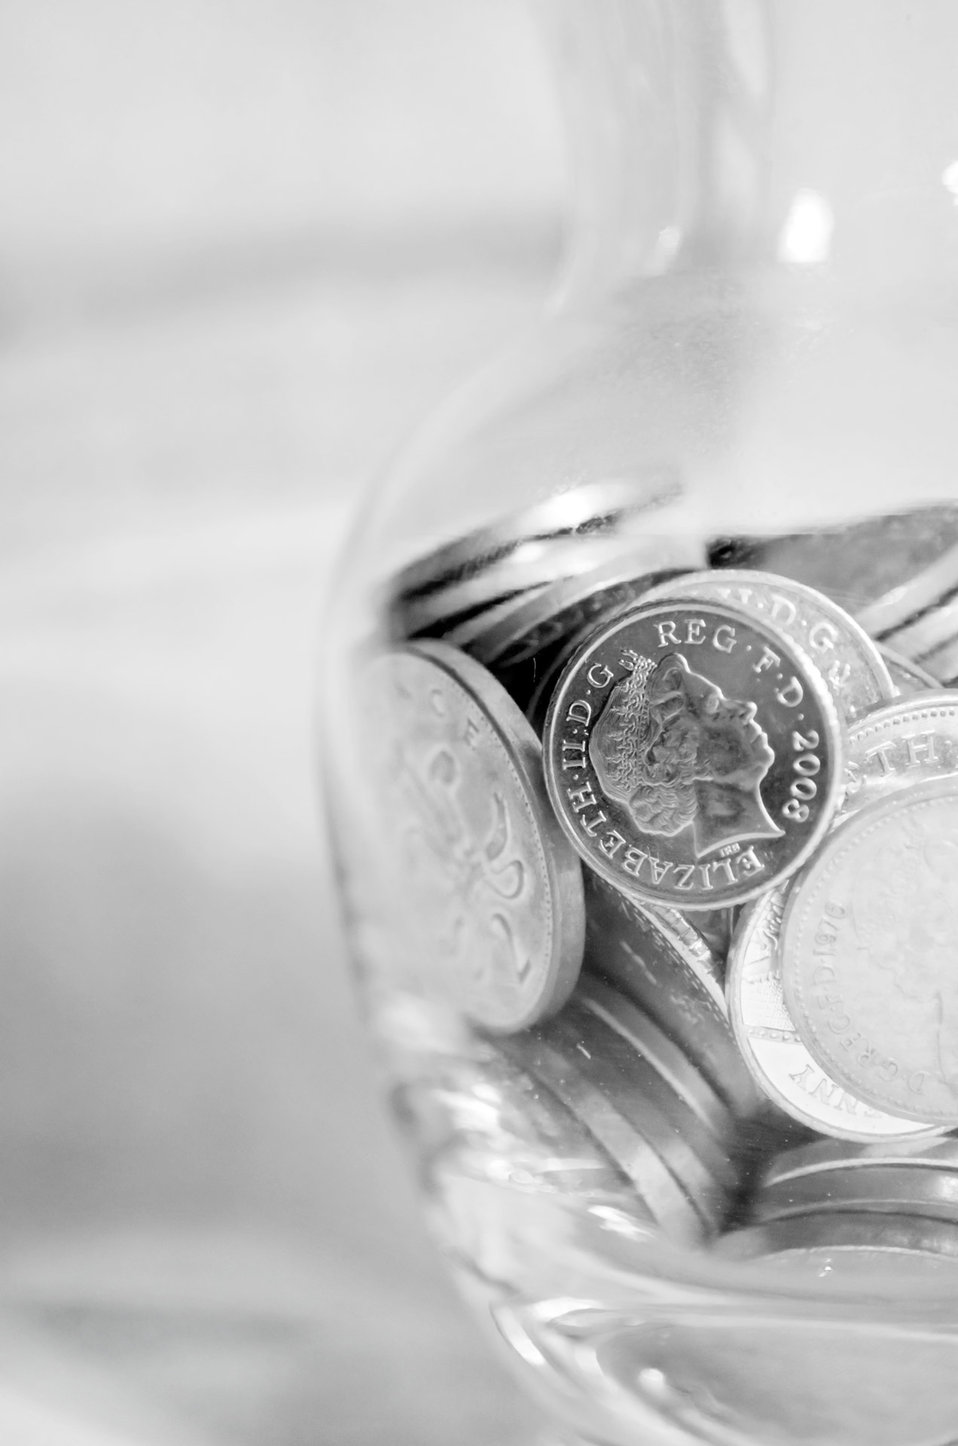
Pounds in glass vase.